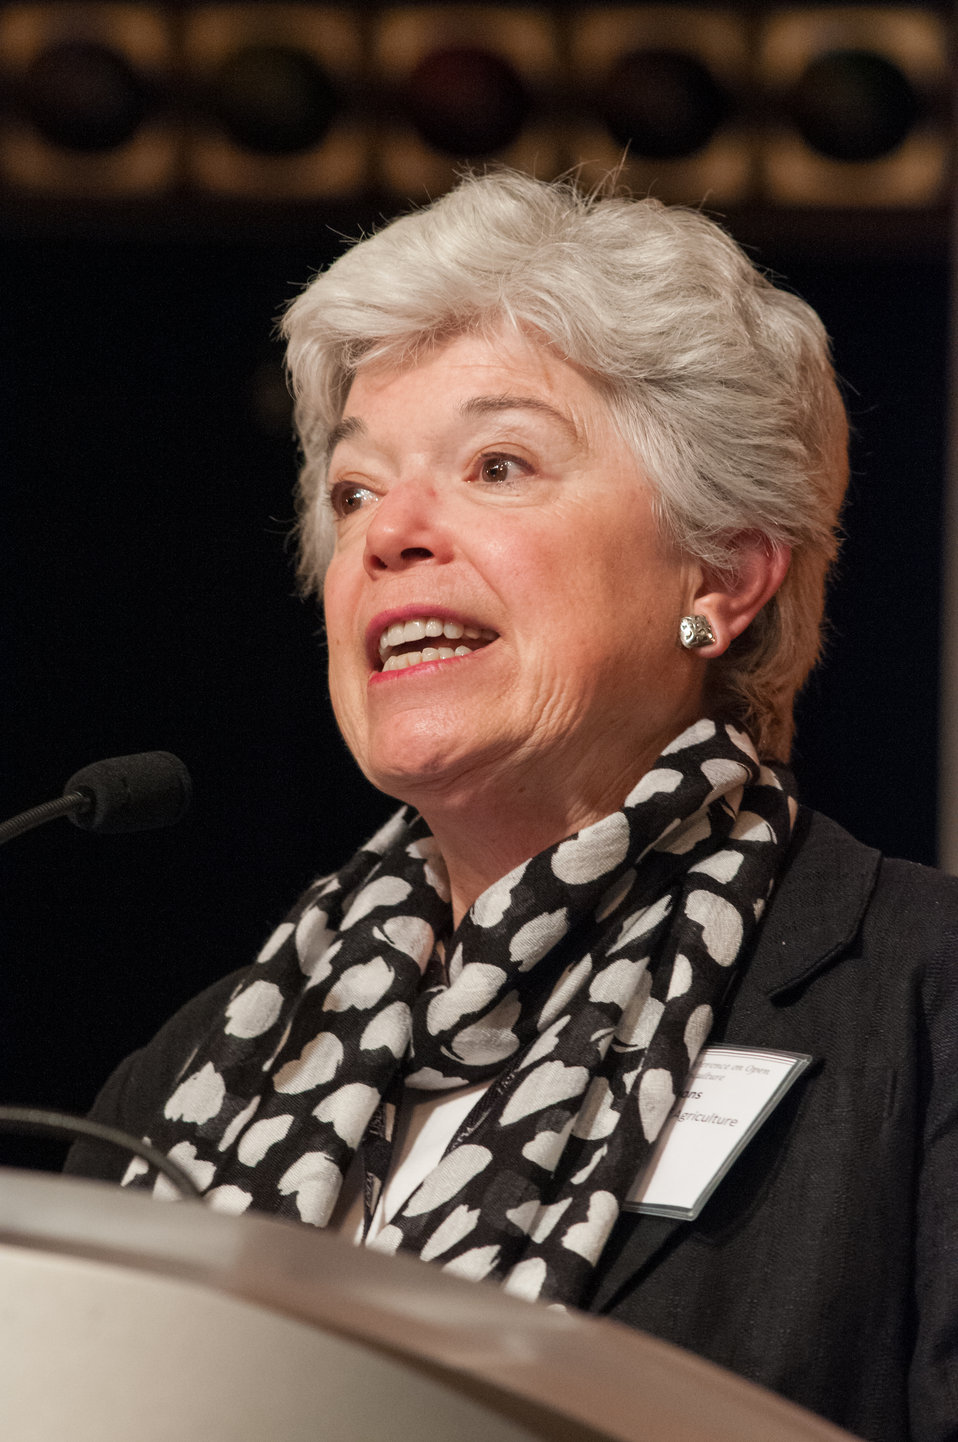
U.S. Department of Agriculture (USDA) Agricultural Research Service (ARS) Crop Production and Protection Deputy Administrator Kay Simmons moderates the, “Delivering on the Value of Agricultural Open Data Globally Leveraging the Value of Scientific Open Data from the Research Laboratory to the Field” panel at the G-8 International Conference on Open Data for Agriculture in Washington, D.C. on Tuesday, Apr. 30, 2013. The conference launched a new 'virtual community' of Food, Agriculture, and Rural data on Data.gov-the U.S. Government's data sharing website-to catalogue America's publicly available agricultural data and increase the ability of the public to find, download, and use datasets that are generated and held by the Federal Government. The data community features a collection of more than 300 newly cataloged datasets, databases, and raw data sources related to food, agriculture, and rural issues from agencies across the U.S. Government. In addition to the data catalog, the virtual community shares a number of applications, maps and tools designed to help farmers, scientists and policymakers improve global food security and nutrition.